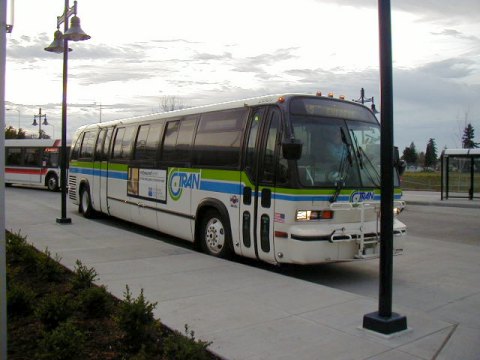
A C-Tran express bus parked at Parkrose/Sumner Transit Center in Portland, Oregon. The bus is a General Motors RTS, built in 1982 and now retired.